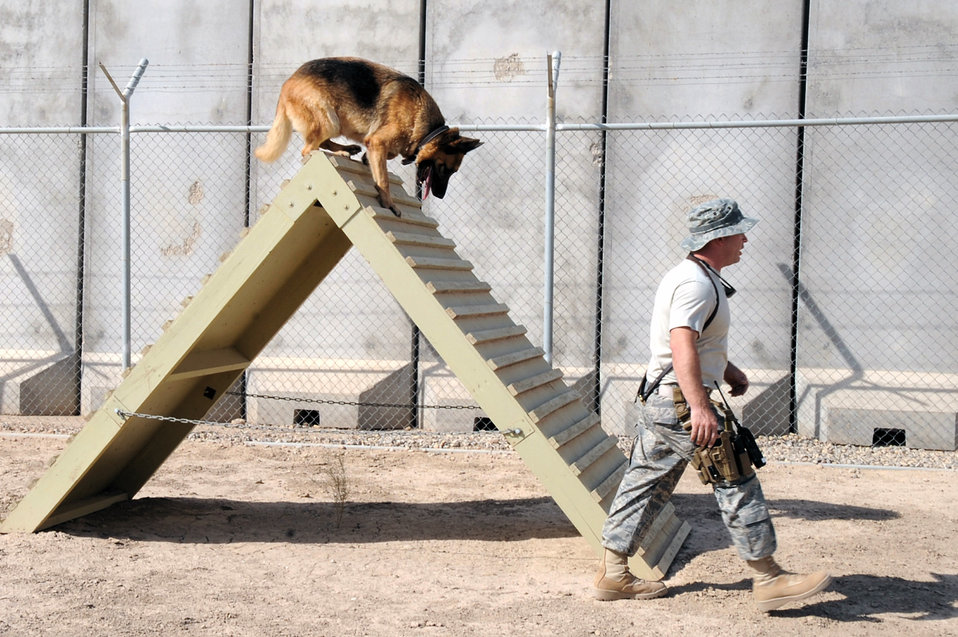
Some joint missions are for the dogs

Staff Sgt. Sean Neisen runs an obstacle course on base with his dog, Goro E114, July 7 at Ali Base, Iraq. Dog handlers keep their partners in shape to ensure they are ready for vehicle searches that drive onto Contingency Operations Base Adder and Ali Base daily. Sergeant Neisen is a military working dog handler assigned to the 407th Provost Marshals Office from Ramstein Air Base, Germany.